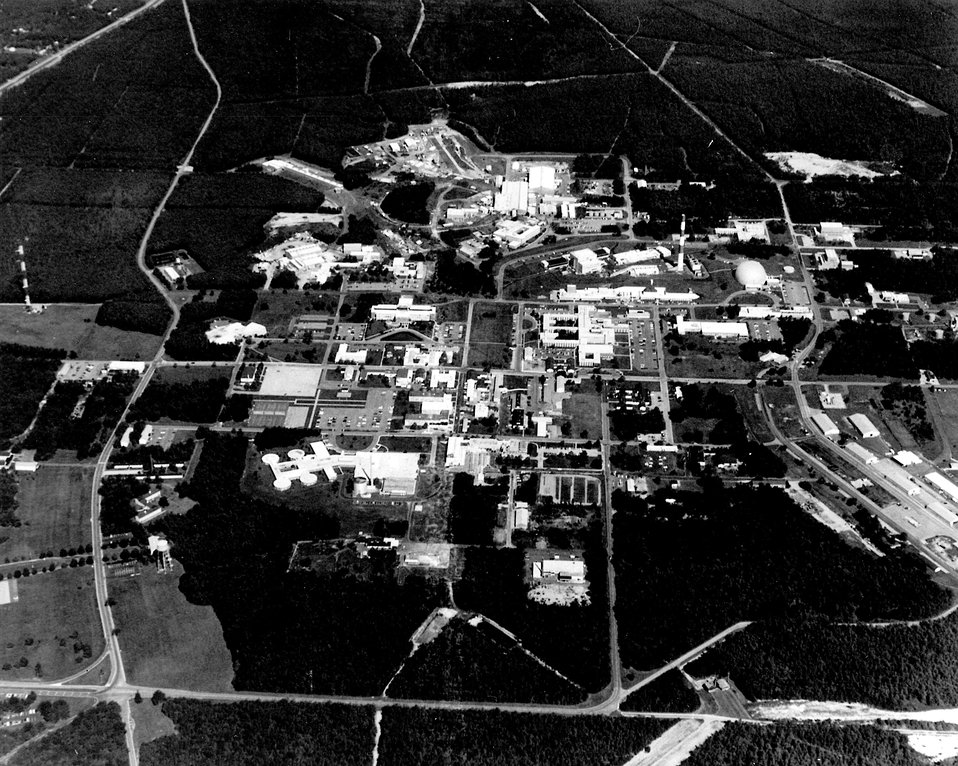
Aerial view of the U.S. Atomic Energy
Commission's Brookhaven National Laboratory